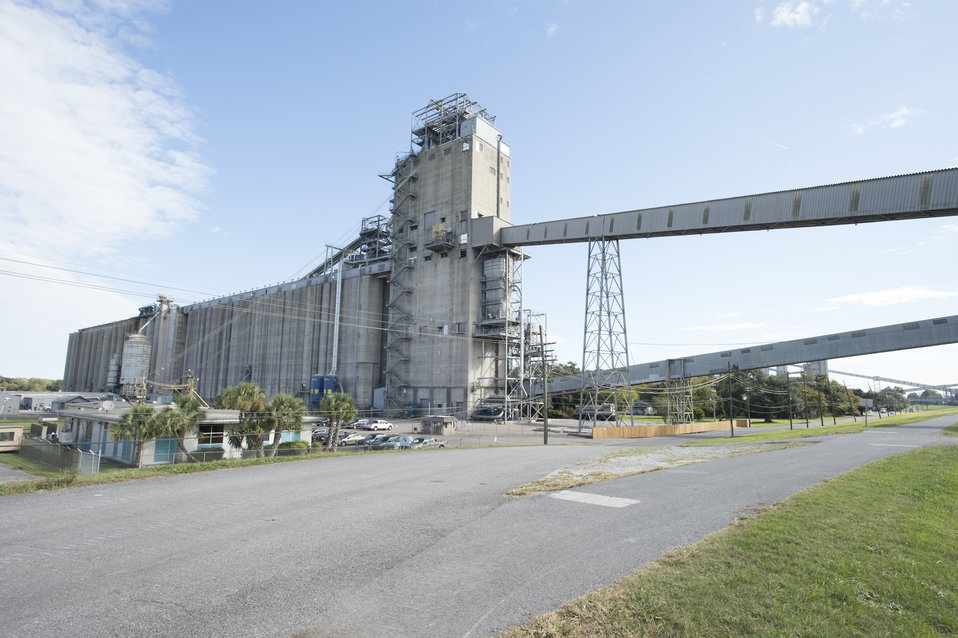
Storage facilities for grain transferred from barges awaiting export near the Port of New Orleans in in New Orleans, LA on Tuesday, Nov. 19, 2013.